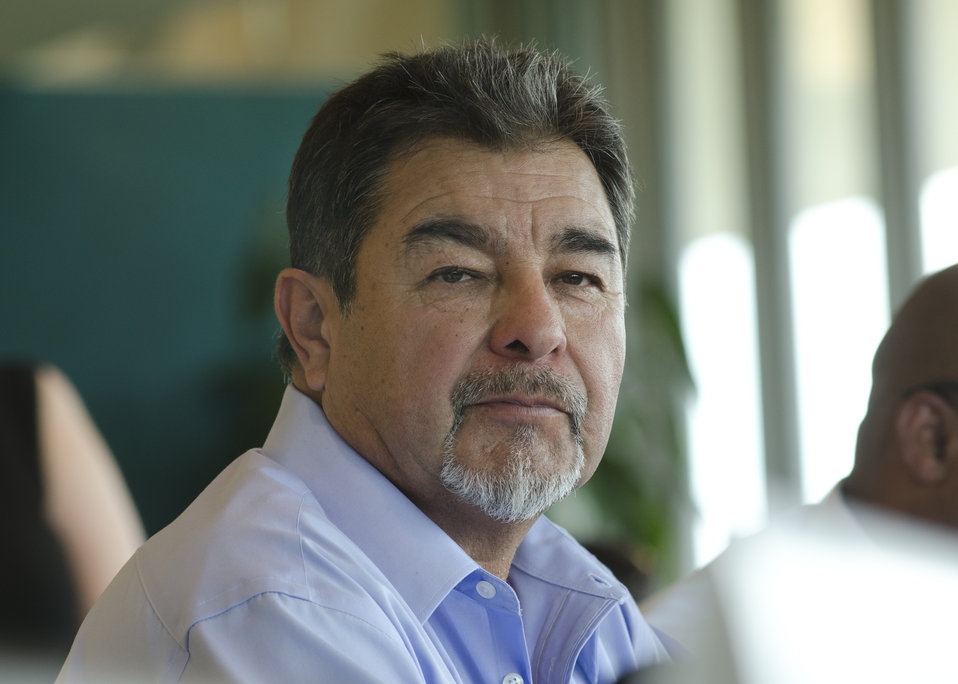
Farmer/Rancher Soboba Band of Luiseno Indians in Banning, CA., Edward Soza, listens to speakers at the first business meeting of the U.S. Department of Agriculture’s (USDA) Council for Native American Farming and Ranching (CNAFR) held at the National Museum of the American Indian in Washington, D.C., on Tuesday, Aug. 14, 2012. CNAFR was created to advise the Secretary on ways to eliminate barriers to participation for Native American Farmers and Ranchers in USDA programs. The Council was established as part of the Keepseagle settlement, and is conducted under the oversight of USDA's Office of Tribal Relations under the Office of the Secretary of Agriculture.